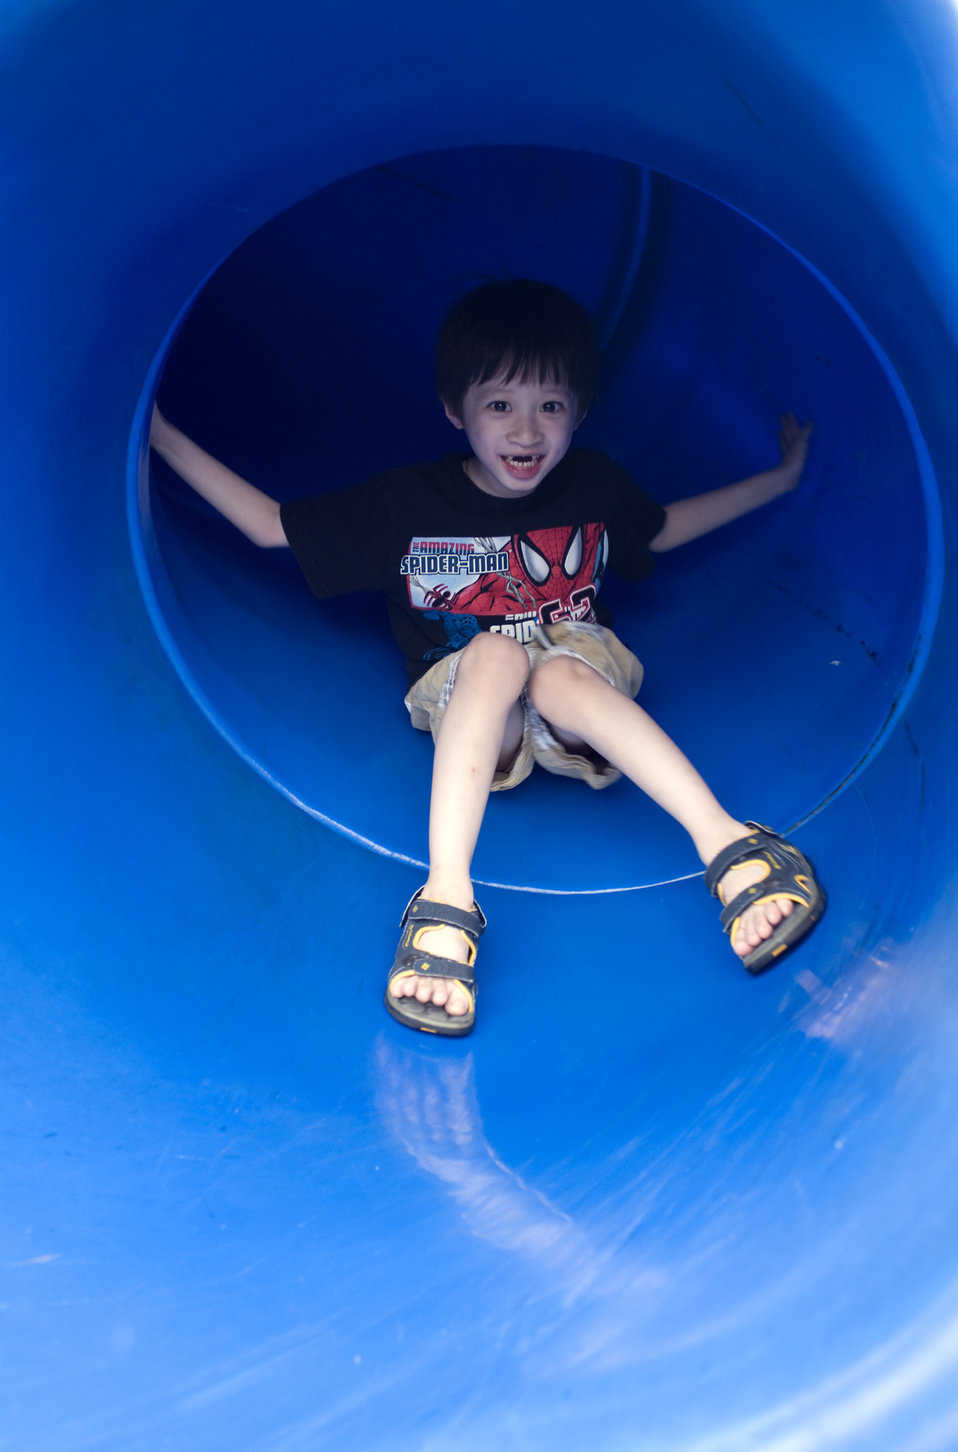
Under the watchful eye of his mother, this young boy was taking a trip down a bright blue slide at a neighborhood playground. Note that he was wearing a darkly-colored t-shirt, and denim shorts, which help protect his skin from the sun's harmful rays. He was also wearing a coating of sunscreen on his sun-exposed skin.